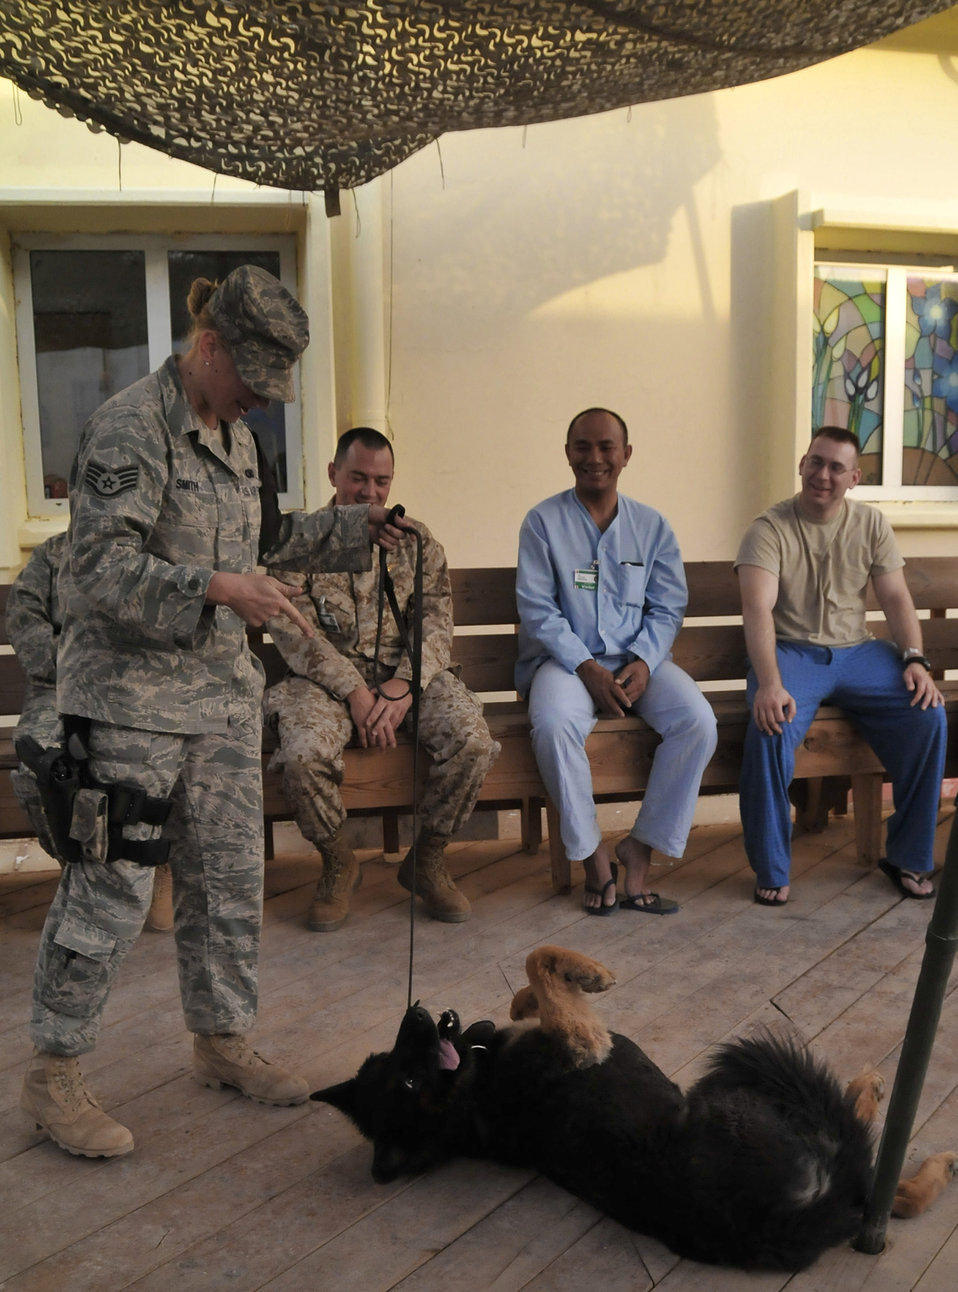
Airmen 'unleash' new recovery program for patients

Staff Sgt. Kristen Smith and her explosives-detection military working dog, Cezar, put on a demonstration for patients at the Air Force Theater Hospital as part of the newly created K-9 Visitation Program May 15 at Joint Base Balad, Iraq. The program works to further patient recovery after injury or illness through animal-assisted therapy. Sergeant Smith is a 332nd Expeditionary Security Forces Group K-9 handler. She and her dog are deployed from McGuire Air Force Base, N.J. Sergeant Smith is a native of Johnstown, Pa.